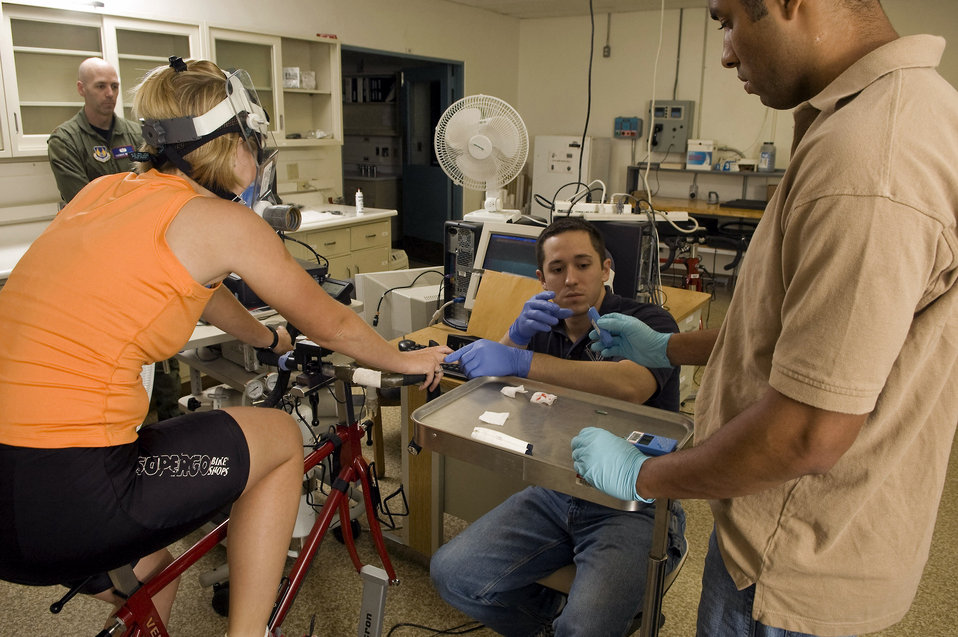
Studying human performance

Staff Sgt. Andre Scott (right) hands a test strip to Thomas Beltran (center) to sample a finger prick blood sample for the accumulation of lactate from Kassi Micak (left). Citrulline malate is being investigated, along with other nutritional supplements and training aids, by AFRL officials to improve cognitive and physical performance of our battlefield Airmen. Sergeant Scott is an aerospace physiology technician, and Mr. Beltran is a behavioral scientist. Ms. Micak is a competitive cyclist based in San Antonio who volunteered to participate the Air Force research Laboratory citrulline malate study.